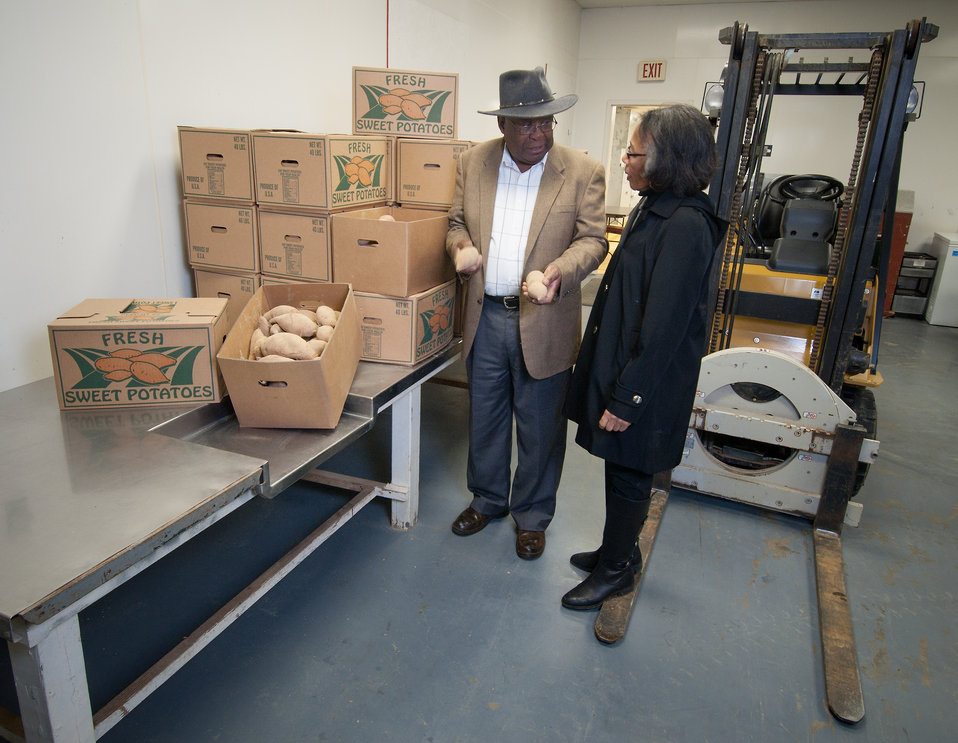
Agriculture Demonstration Outreach Center in Marianna, AR coordinator Theodore Eldridge and East Arkansas Enterprise Community, Inc. in Forrest City, AR consultant Mildred Barnes-Griggs check sweet potatoes packaged at the University of Arkansas at Pine Bluff, Agriculture Demonstration Outreach Center in Marianna, AR on Mar. 5, 2013. The Arkansas Delta Seeds of Change (ADSOC) was able to purchase production equipment with a U.S. Department of Agriculture (USDA) Rural Development (RD) Rural Business Enterprise Grant (RBEG). USDA in partnership Heifer International (an International organization whose mission is to work with communities to end hunger and poverty and care for the Earth) and various for-profit and non-profit organizations have put in motion the “Seeds of Change Implementation Plan” to use sustainable agriculture to build food systems in the Arkansas Delta. The program has evolved into the ADSOC Initiative. The ADSOC Initiative assists producers with technical assistance for crop production, management, harvesting, food security, value added products and marketing options and provides access to specialized production and marketing equipment.